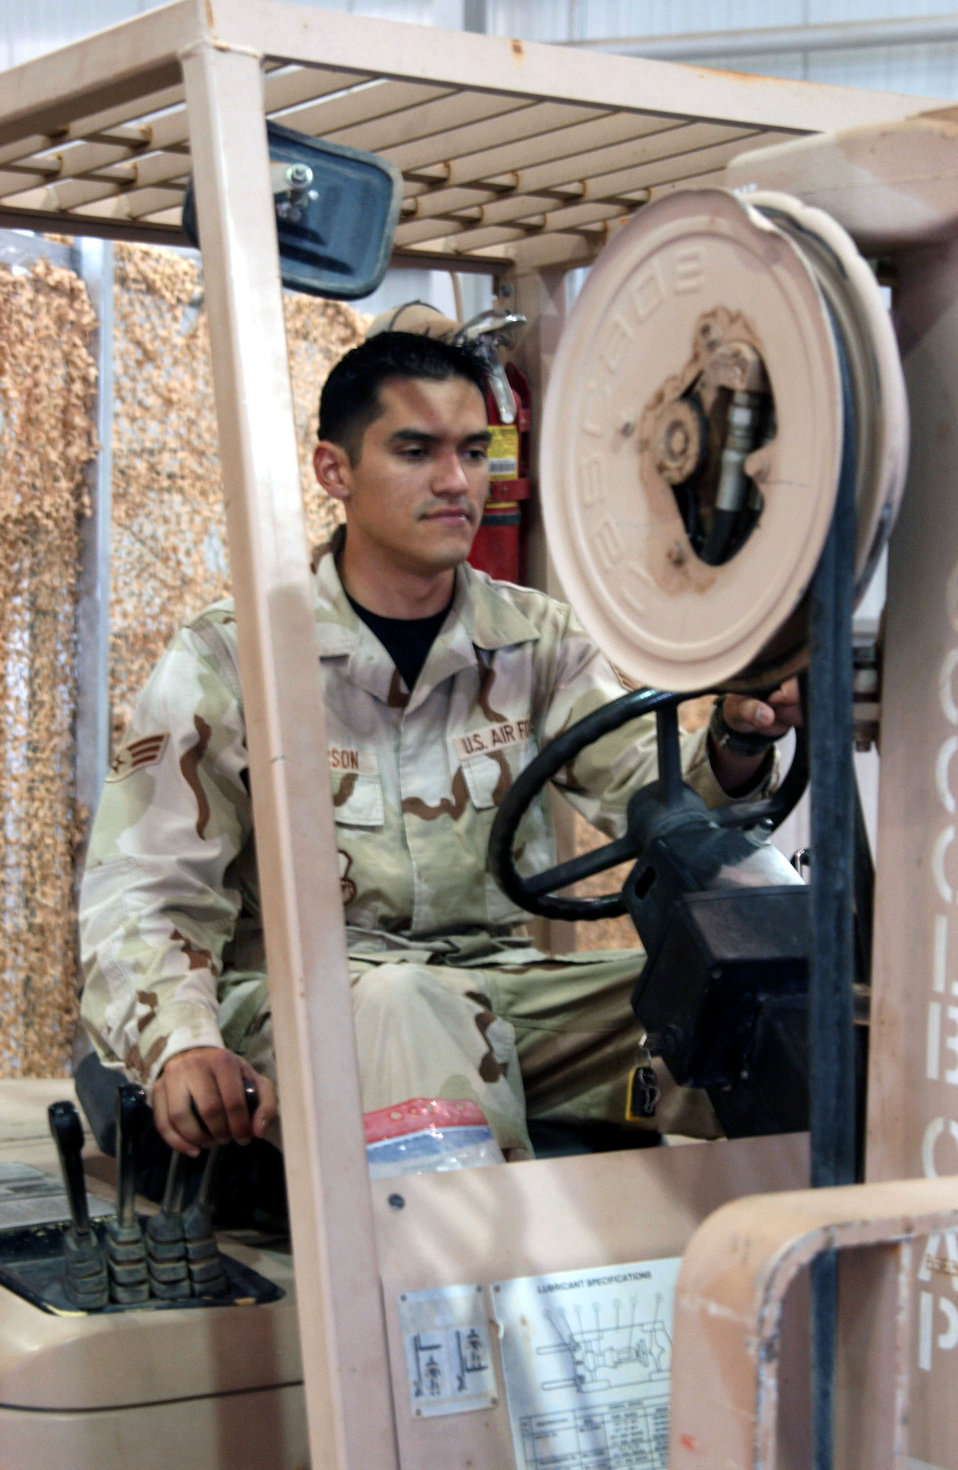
Port Dawgs

Senior Airman Daniel Anderson operates a fork lift Nov. 2 at the air terminal at Balad Air Base, Iraq. Airman Anderson is an air transportation journeyman, or